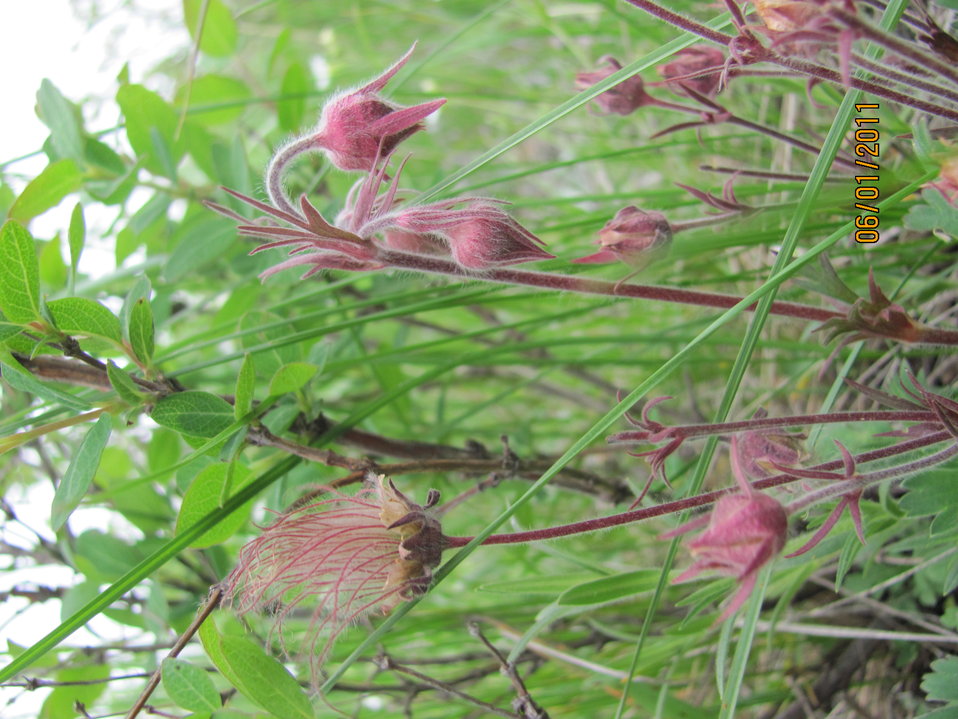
Prairie Smoke (Geum triflorum) is a very beautiful flower found in early May to June on the prairie. The flowers are feathery with a reddish purple color. When in bloom, the feathers resemble a puff of smoke. This specimen was found along the auto tour trail at the Woodworth Station within the Chase Lake National Wildlife Refuge Headquarters in North Dakota.